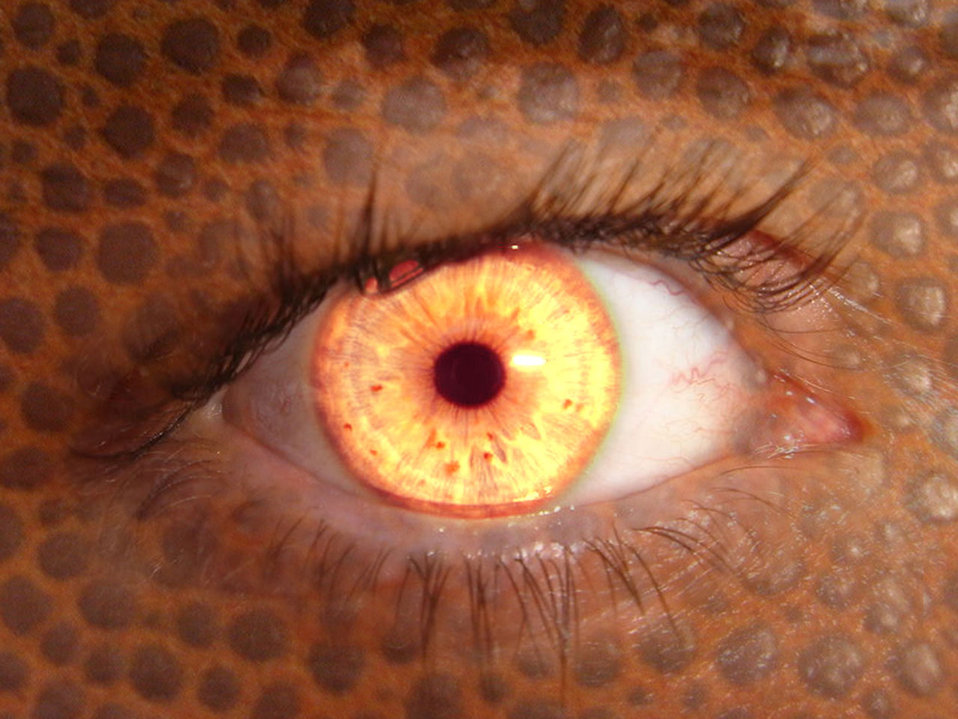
Human eye turn to a monster.